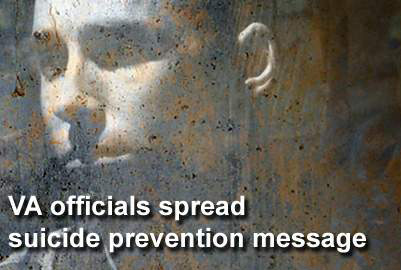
Suicide prevention

Department of Veterans Affairs officials are expanding their suicide prevention message by posting information on the VA Suicide Prevention Lifeline on public transportation in cities across the country.